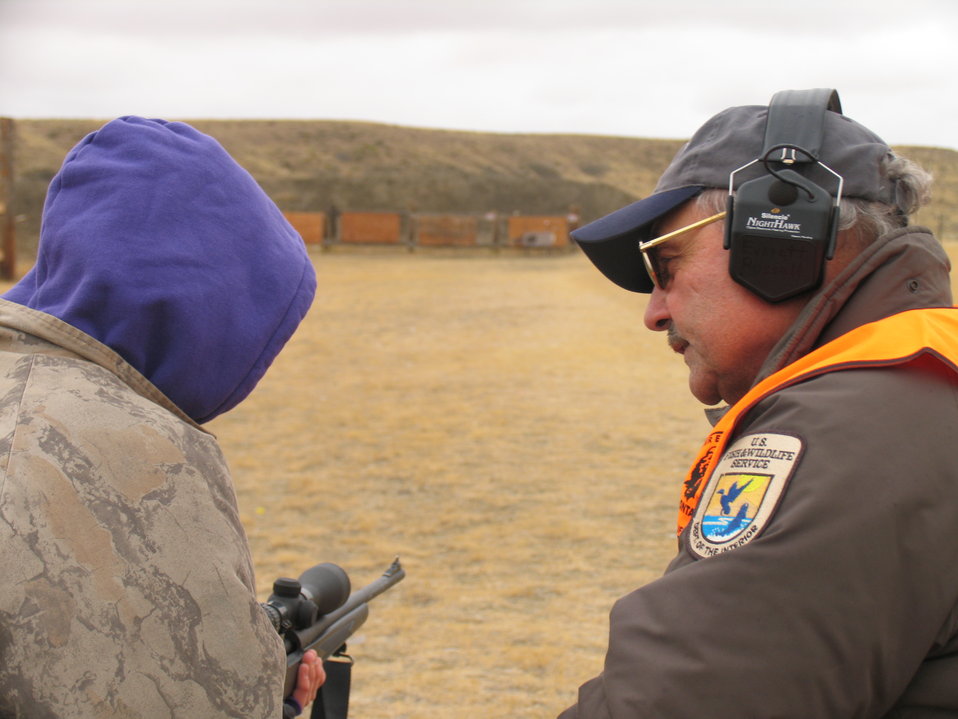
Mentoring Youth

A Charles M. Russell NWR employee helps a young hunter during a youth elk hunt orientation on CMR.